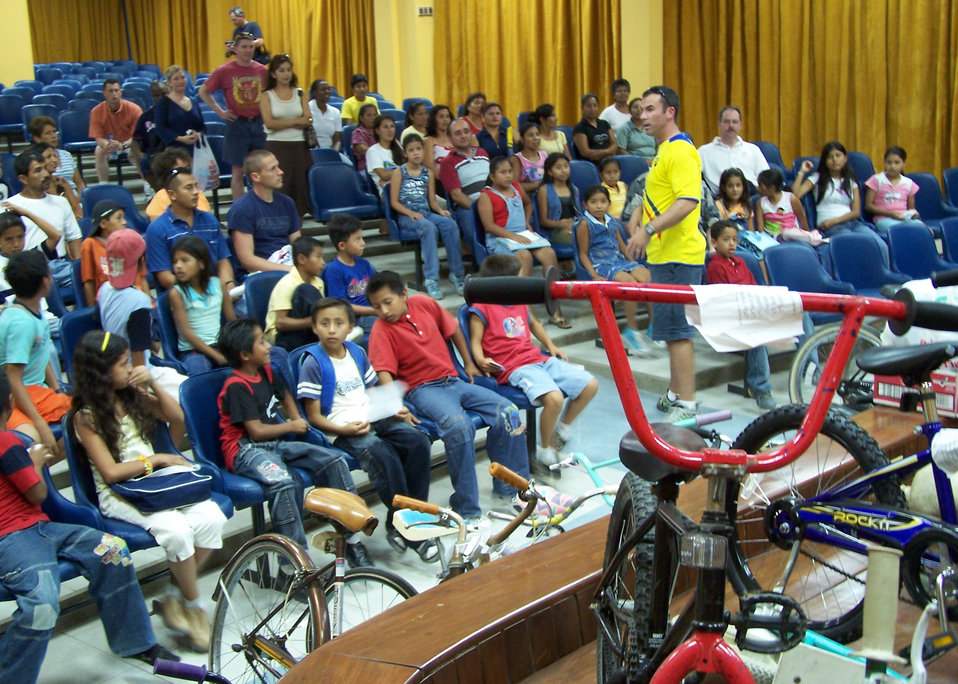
Bicycles for Kids

Maj. Chris Buckley, 478th Expeditionary Operations Squadron and lead volunteer for the English class at the Albergue School in Manta, Ecuador, tells the students the process for retrieving their donated bicycles.